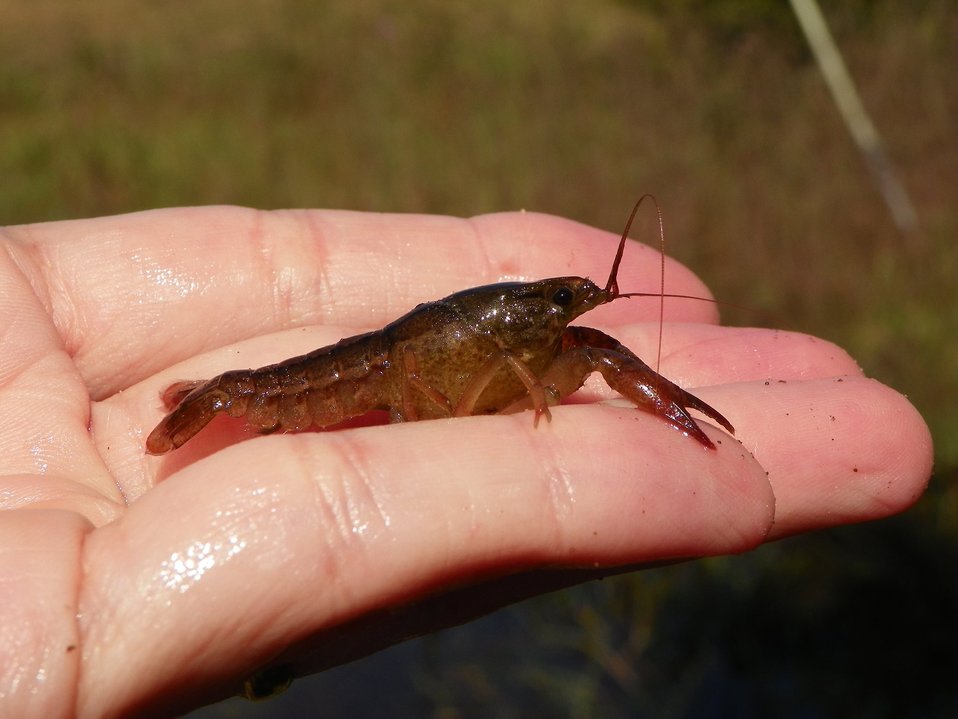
Panama City crayfish

The Panama City crayfish is known only from the Panama City area of Bay County in Northwest FL. Much of their natural habitat (wet pine flatwoods) has been lost or degraded through residential, commercial, and industrial development. We’re working with our state partners to restore and improve management on wetland properties throughout the species range.